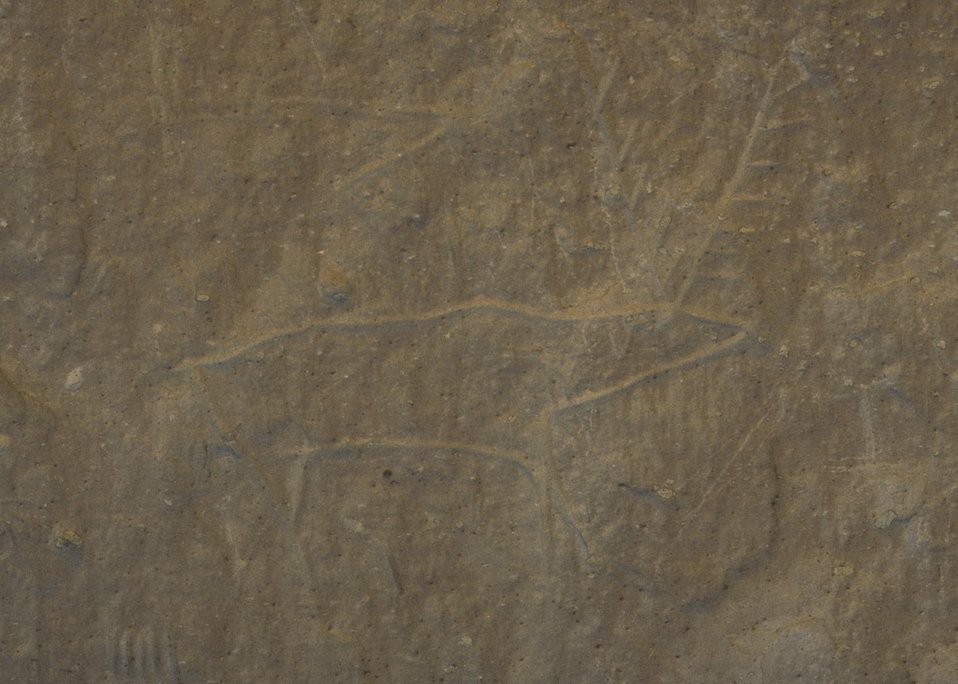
White Mountain Petroglyphs, Rock Springs Field Office.